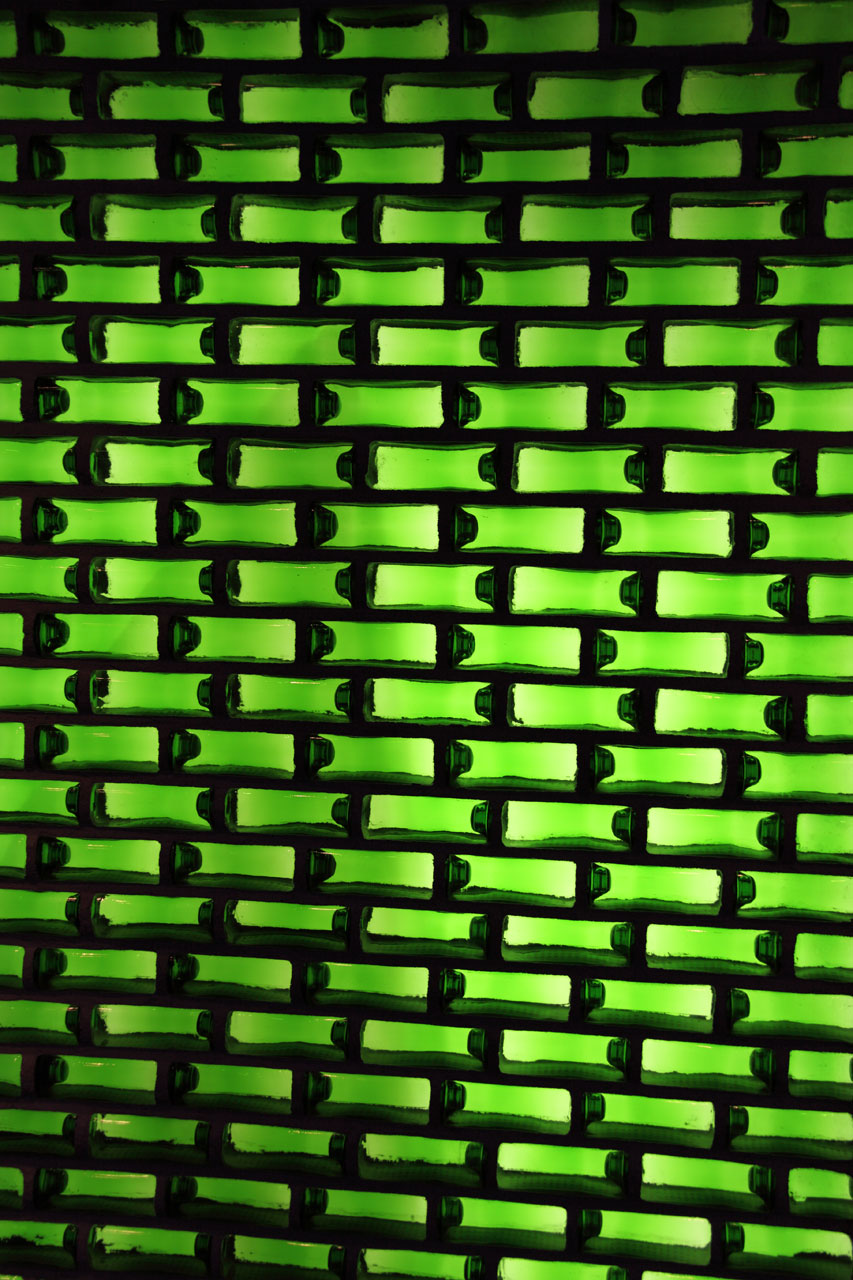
Green bottle texture

Green bottle background.